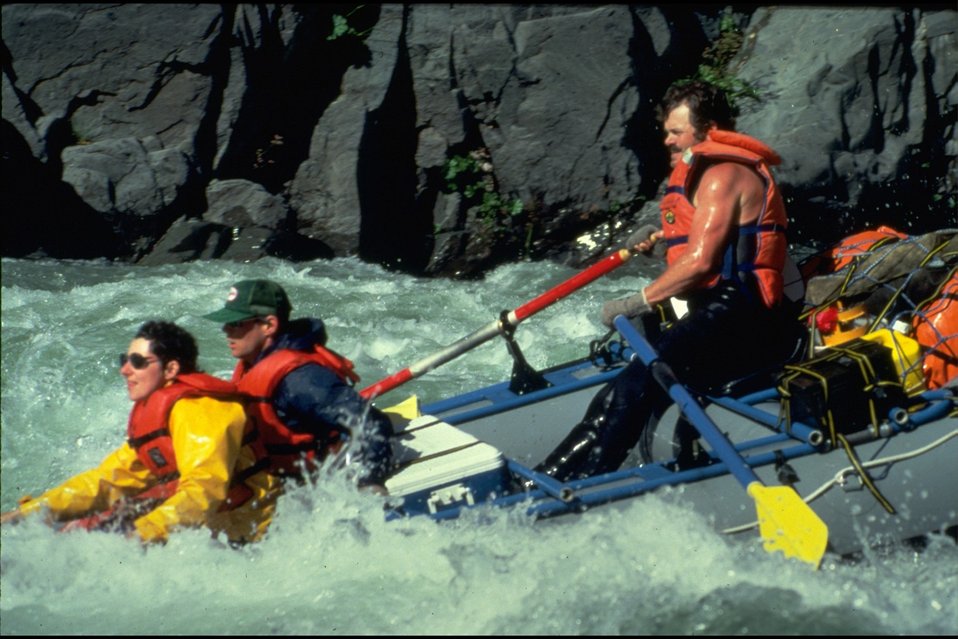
Rogue River - raft in rapid.